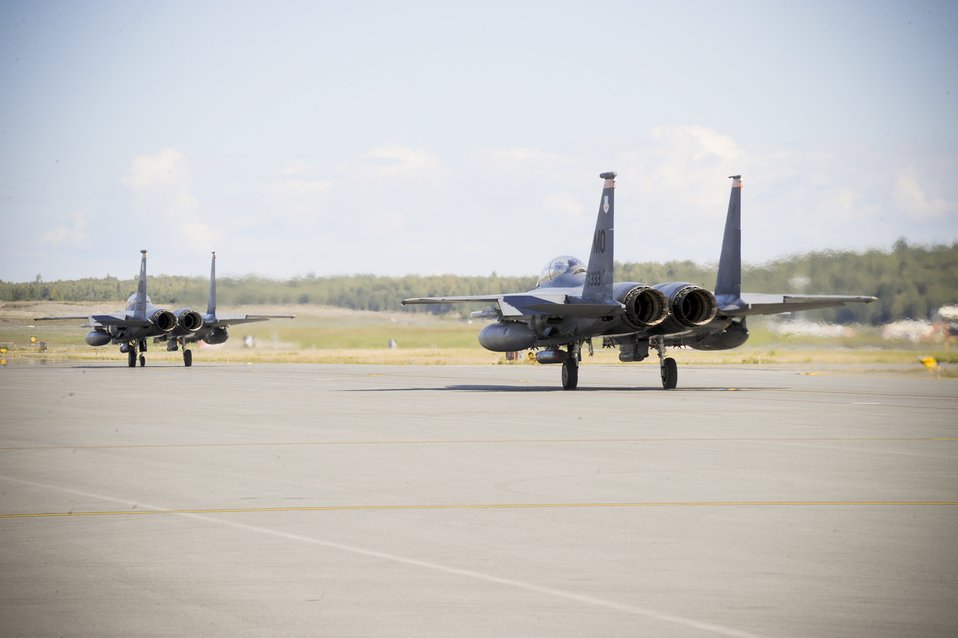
Eagles aid Predators

Two F-15E Strike Eagles taxi the runway Aug. 25, 2010, at Joint Base Elmendorf-Richardson, Alaska. The 391st Fighter Squadron out of Mountain Home Air Force Base, Idaho, is currently assigned to JB Elmendorf for a temporary duty assignment to aid in training exercises for the F-22 Raptor squadrons stationed here.